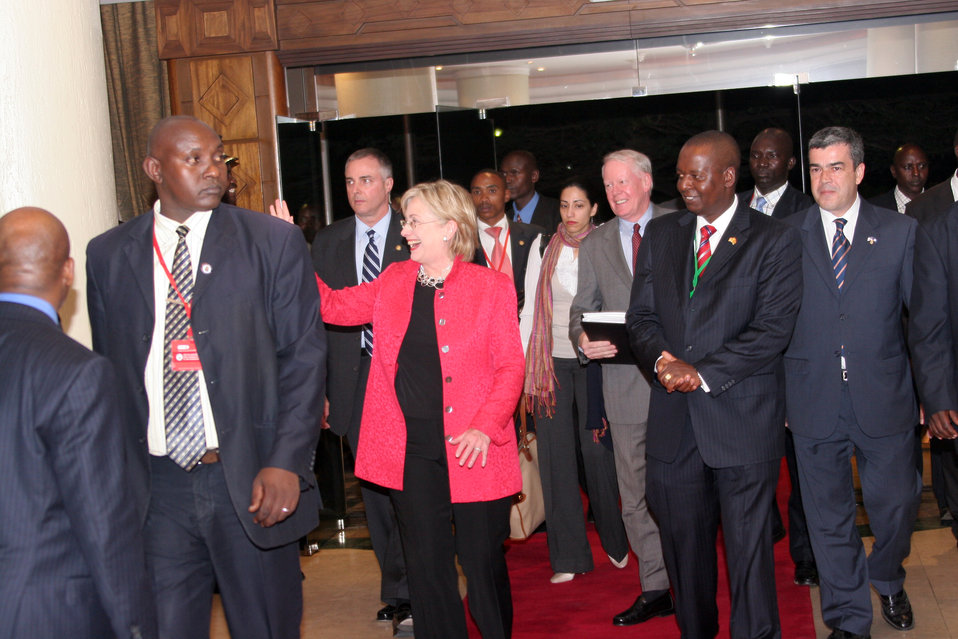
Secretary Clinton Arrives in Nairobi, Kenya

U.S. Secretary of State Hillary Rodham Clinton arrives at the Hotel Intercontinental in Nairobi, Kenya August 4, 2009.